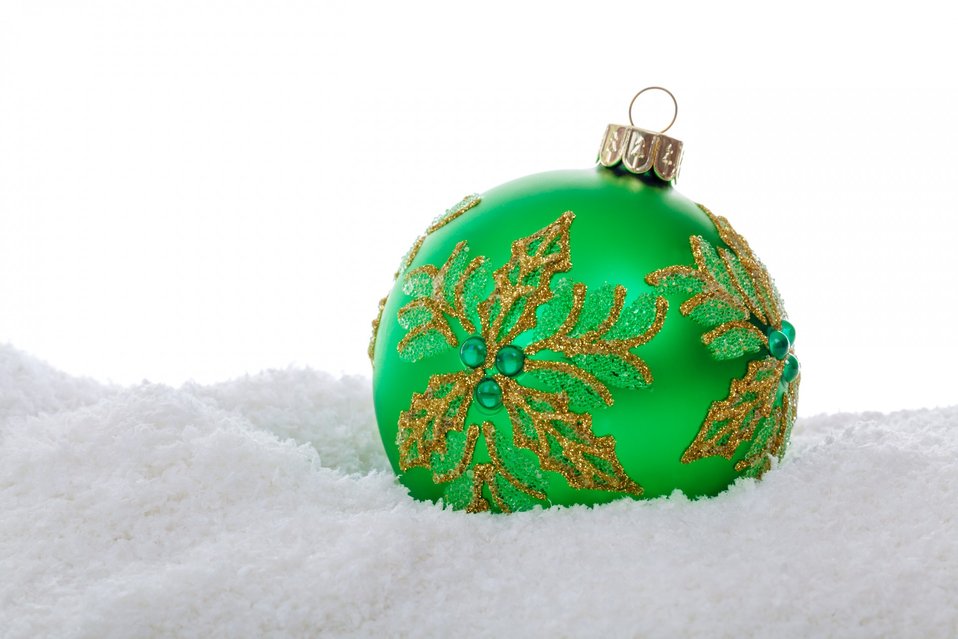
Green christmas bauble

Green christmas ball in snow isolated on white background.